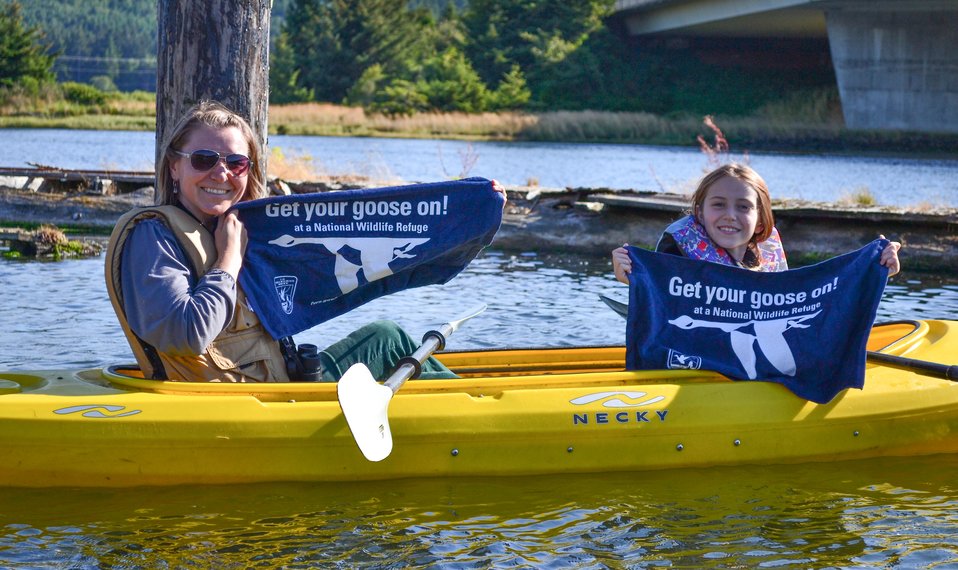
Get Your Goose On! - Siletz Bay Style

Anna and Fiona get their goose on during a paddle trip at Siletz Bay NWR!